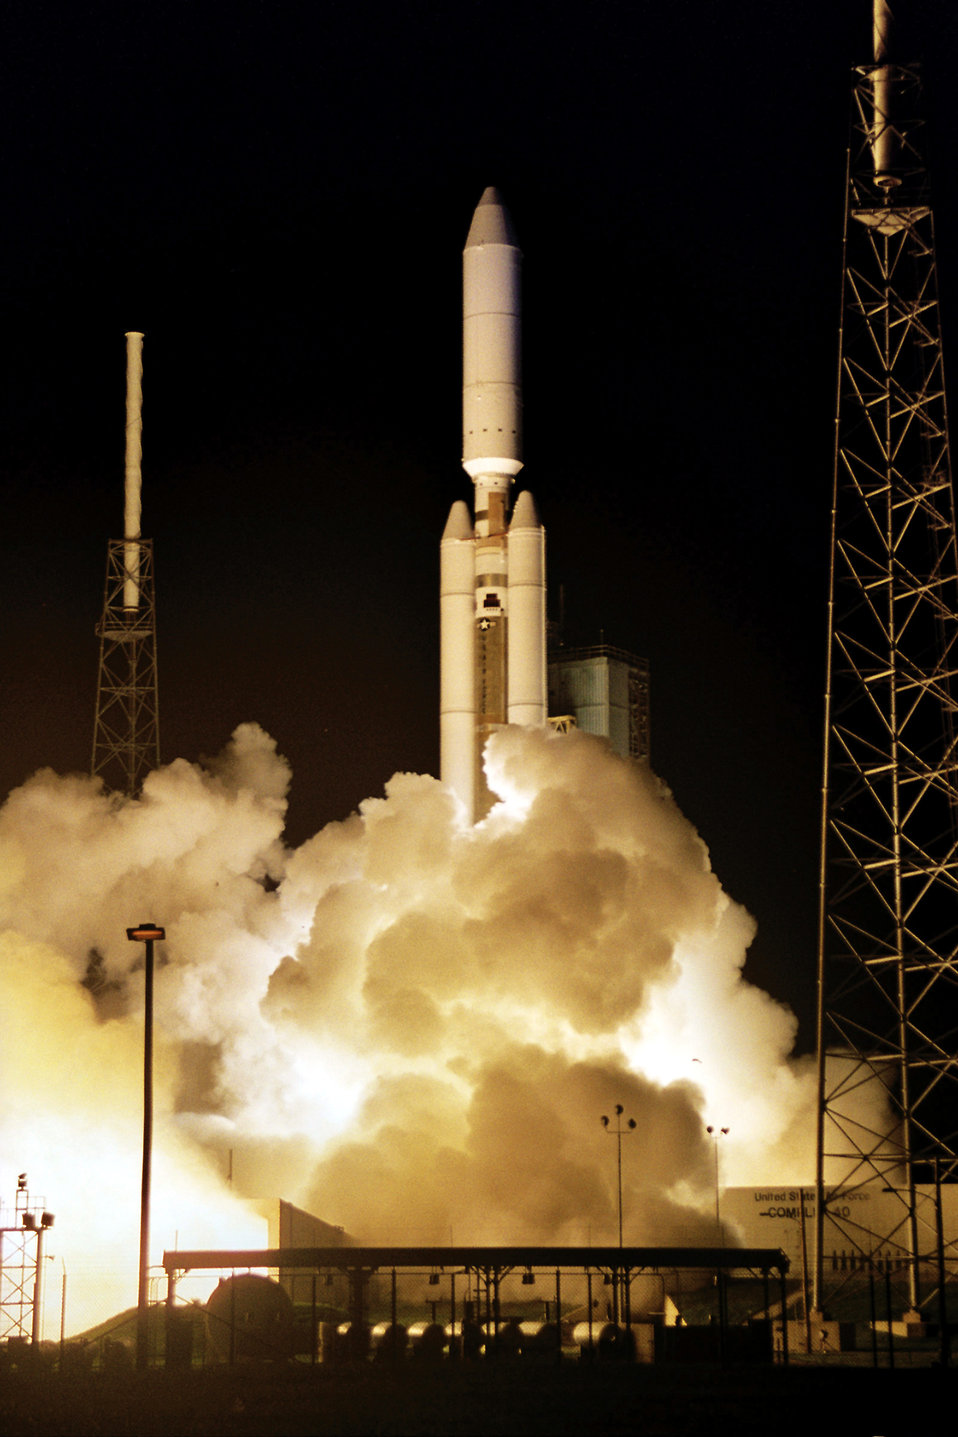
NRO payload

CAPE CANAVERAL AIR FORCE STATION, Fla. -- A Titan IV B rocket takes off from here Sept. 9. The rocket carried a National Reconnaissance Office payload into orbit. The classified payload will help enhance national security for the United States and support deployed forces.